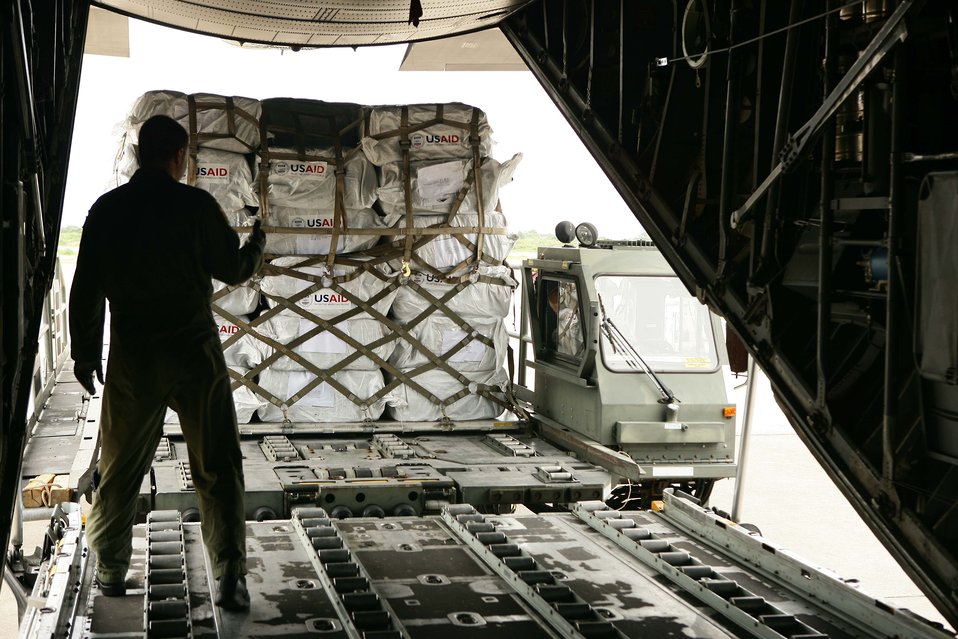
First C-130 crew provides humanitarian assistance to Burma

Supplies are loaded into a C-130 Hercules to deliver to the country of Burma May 12 at the Yangon International Airport. The plane carrying water, food and medical supplies provided relief to Burma, which was struck by Cyclone Nargis May 2.